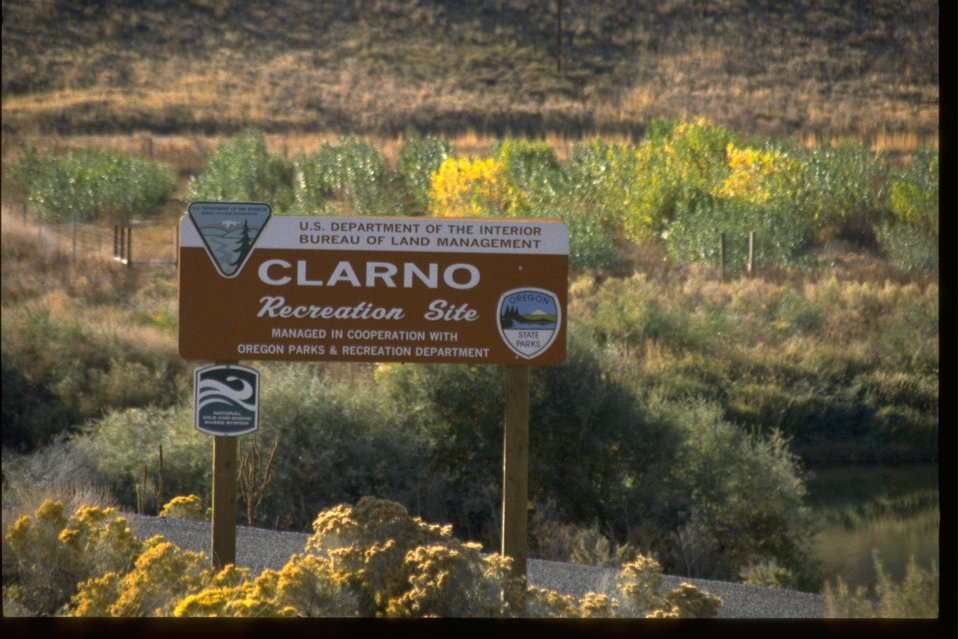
Clarno Recreation sign with a cottonwood orchard across the John Day River.